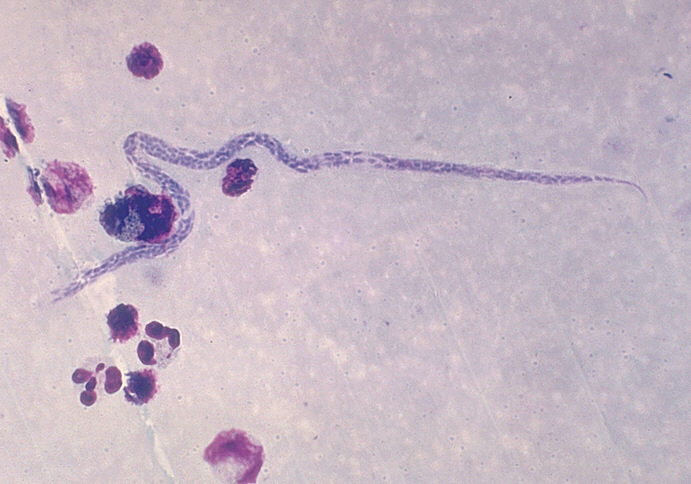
Mansonella ozzardi, infectious agent of filariasis.